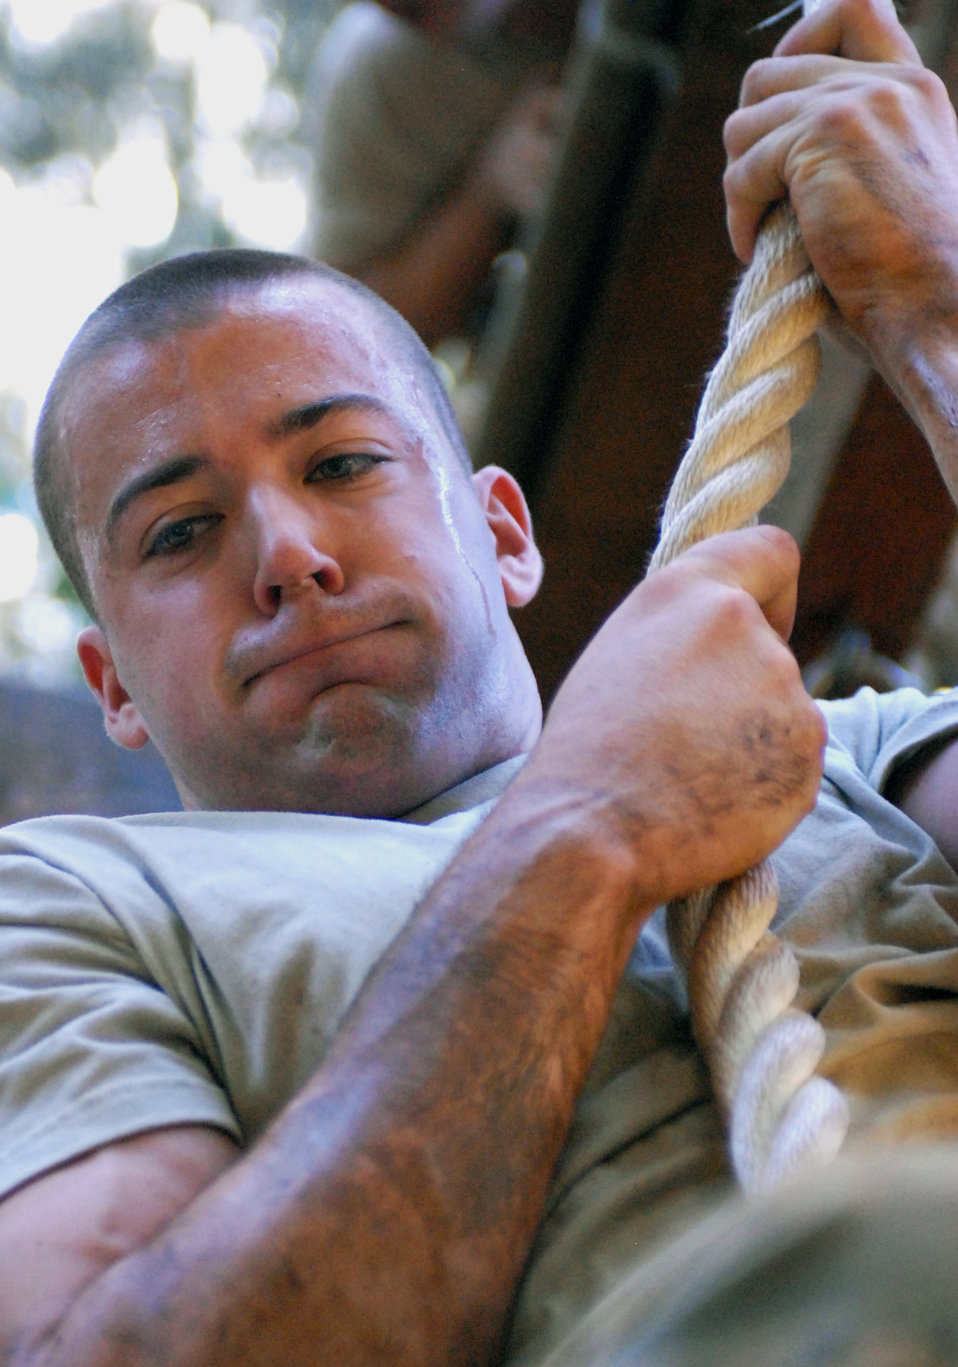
Airmen vie for slots in Army Air Assault course

Senior Airman Jeffrey Kristek climbs a rope on